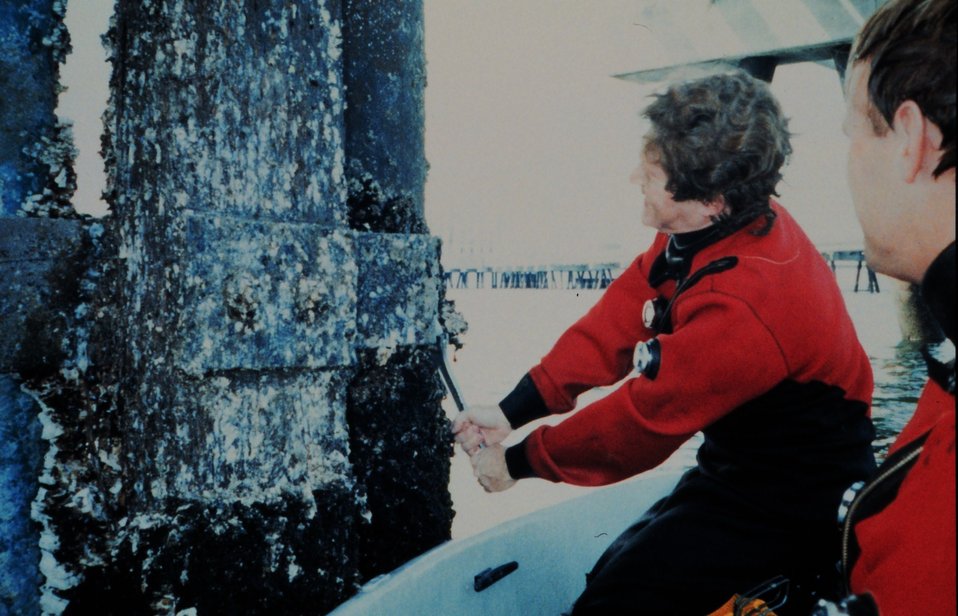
Performing maintenance on the tide gage installation at Cherry Point. Removing marine growth.